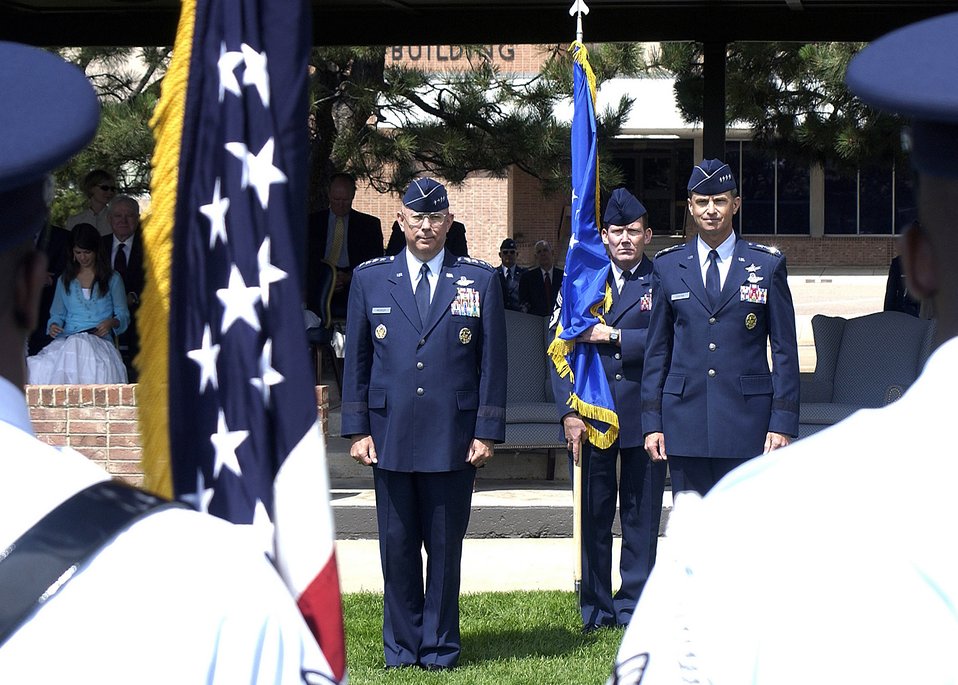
Former astronaut takes command of Air Force Space Command

Gen. Kevin P. Chilton (right) became the 13th commander of Air Force Space Command in a ceremony at Peterson Air Force Base, Colo., on Monday, June 26. Air Force Chief of Staff Gen. T. Michael Moseley presided over the ceremony. Chief Master Sgt. Ron Kriete, AFSPC's command chief, stands ready to present the flag.